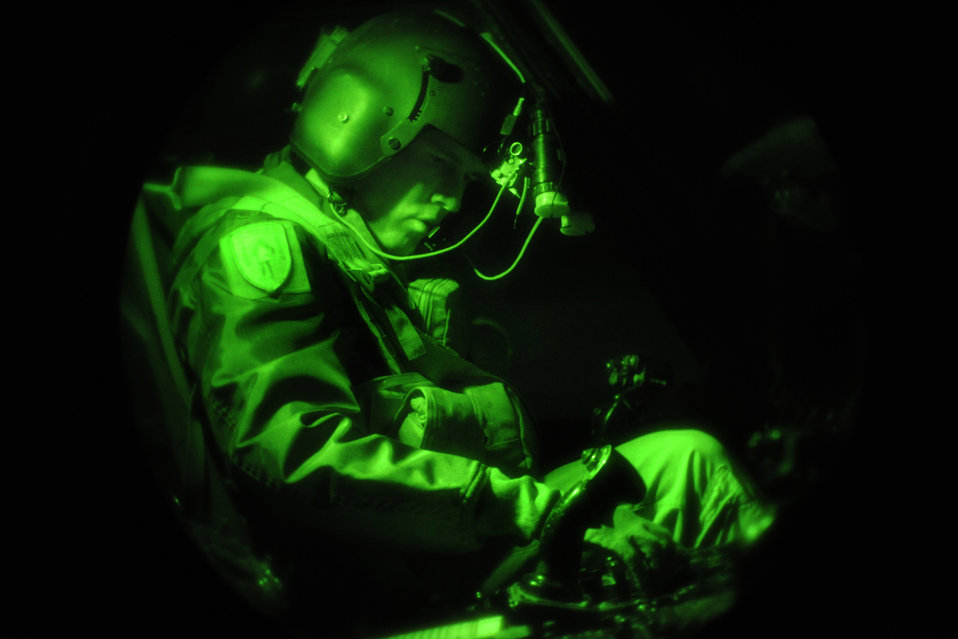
Getting ready to go

Maj. Russ Cook finishes his preflight check before take-off Jan. 15, 2011, at Moody Air Force Base, Ga. Airmen with the 41st and 38th Rescue Squadrons worked with local authorities to conduct a night time search and rescue mission for a missing local teenager. Major Cook is an HH-60G Pave Hawk helicopter instructor pilot with the 41st RQS.